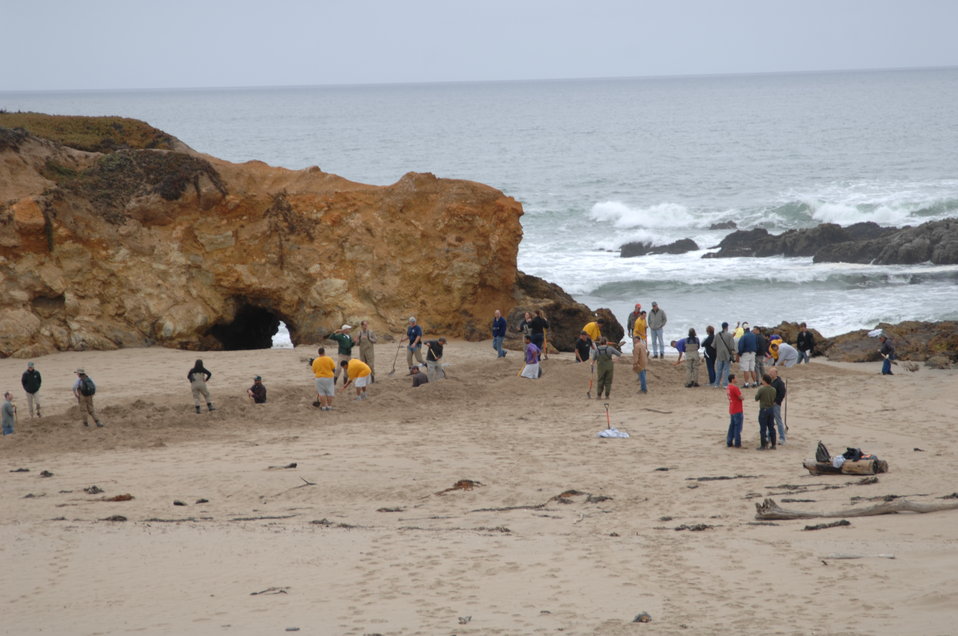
Pescadero Breach 9